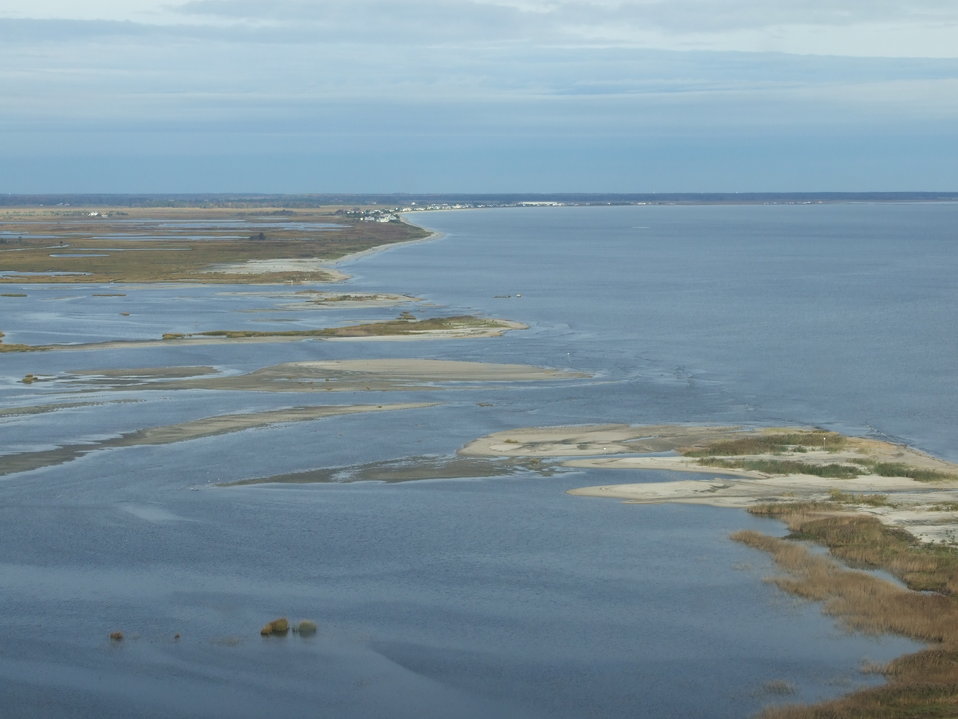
Flooding at Prime Hook National Wildlife Refuge (DE)

Prime Hook National Wildlife Refuge experienced extensive flooding during Hurricane Sandy. This photo is looking north from the Prime Hook Beach community toward Slaughter Beach.